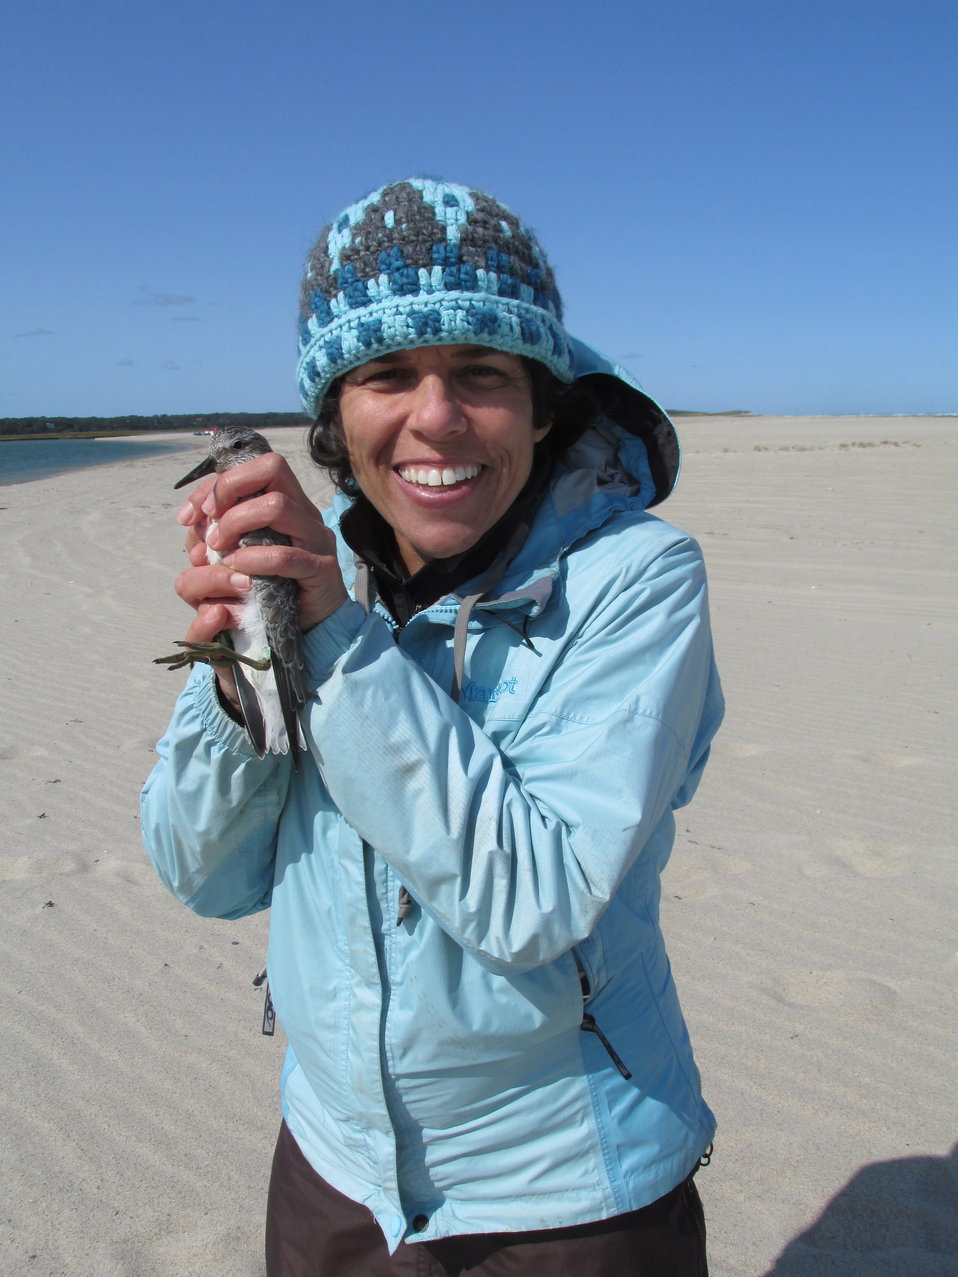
Red knot cannon netting in Cape Cod

Dorie Stolley of Goldenrod Foundation holds a recently banded red knot.